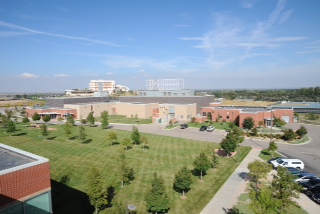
This is an image of the U.S. Department of Agriculture (USDA) research facility in Fort Collins, CO.